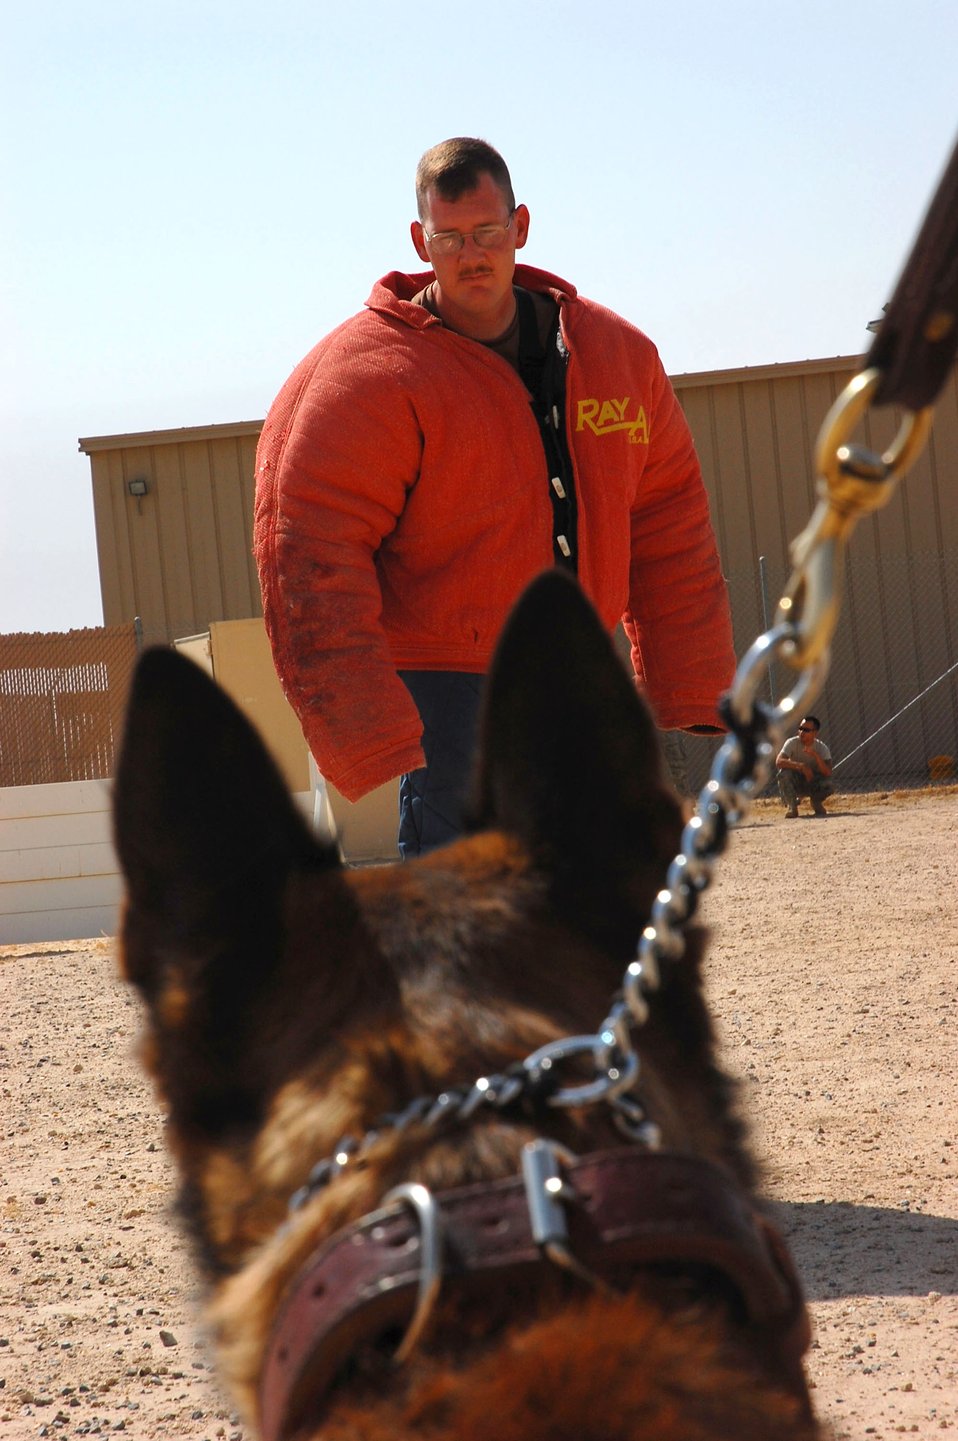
Working like a dog

Axel keeps a sharp eye on a